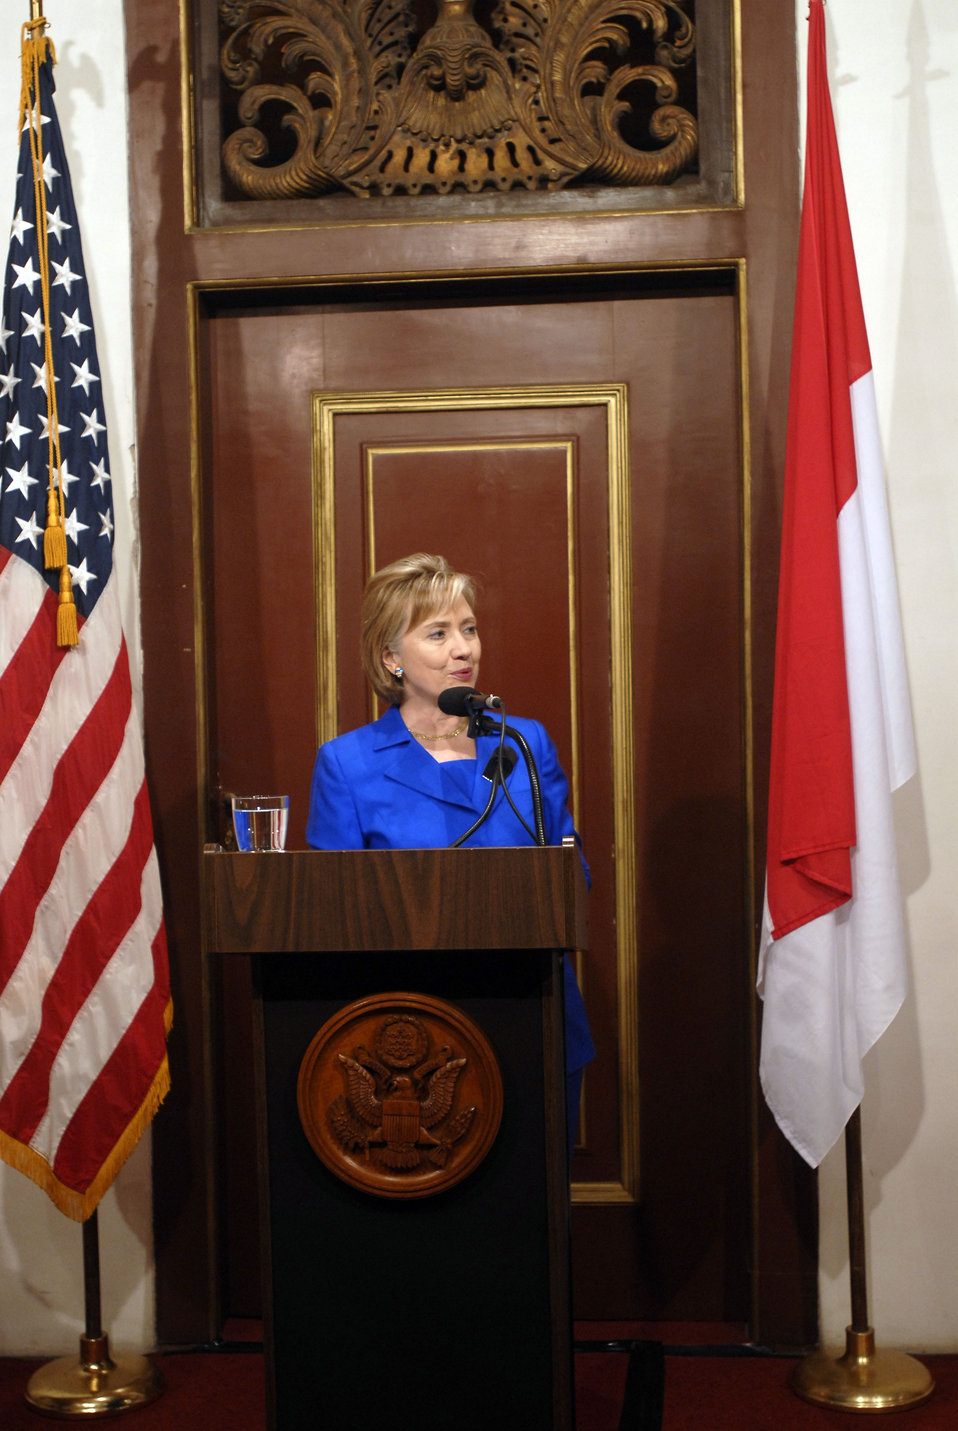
Secretary Clinton Addresses Civil Society Dinner

Secretary Clinton speaks at the Indonesian Civil Society Dinner in Jakarta, Indonesia February 18, 2008.